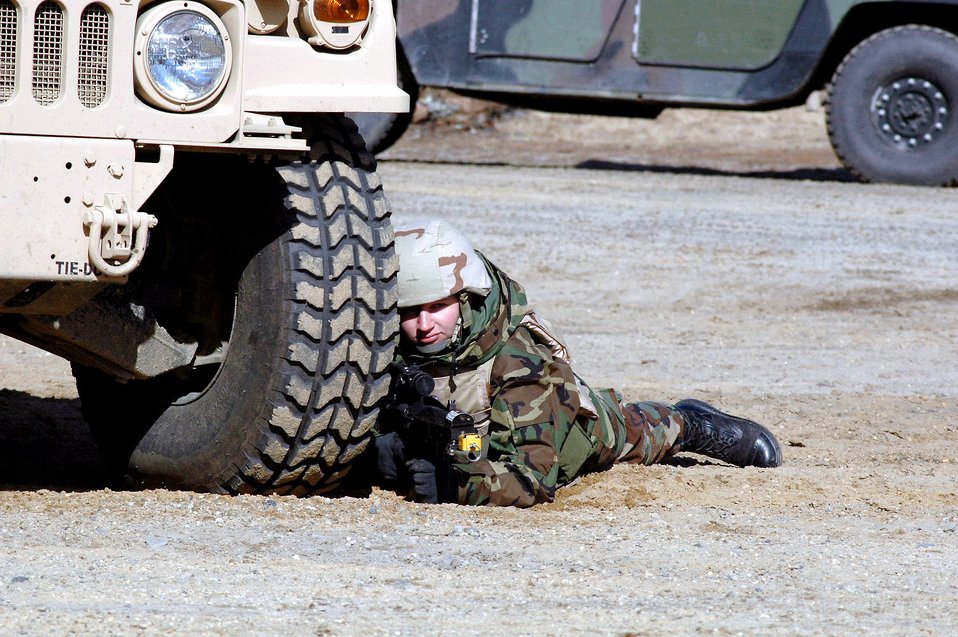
Warrior training

Airman 1st Class Rachel Debolt takes up a defensive position during a scenario for training for the course Feb. 20 on a range at Fort Dix, N.J. The course is taught by members of the Air Force Expeditionary Center's Expeditionary Operations School and 421st Combat Training Squadron, and the course prepares security forces Airmen for upcoming deployments. Airman Debolt is a 569th United Sates Forces Police Squadron, Vogelweh Air Base, Germany, and a student in the Air Force Phoenix Warrior Training Course 08-3.